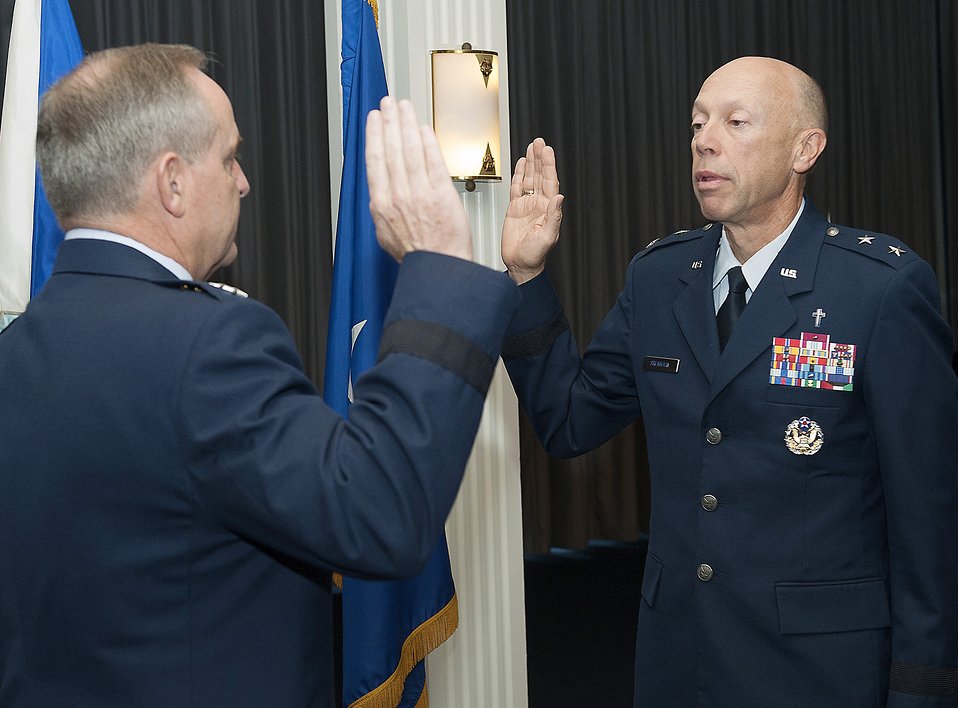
chaplain promo

Newly-promoted Maj. Gen. Howard Stendahl recites the oath of office to Air
Force Chief of Staff Mark A. Welsh III during his promotion ceremony at
Joint Base Anacostia-Bolling, Aug. 31, 2012. Stendahl serves as the Air
Force's chief of chaplains.